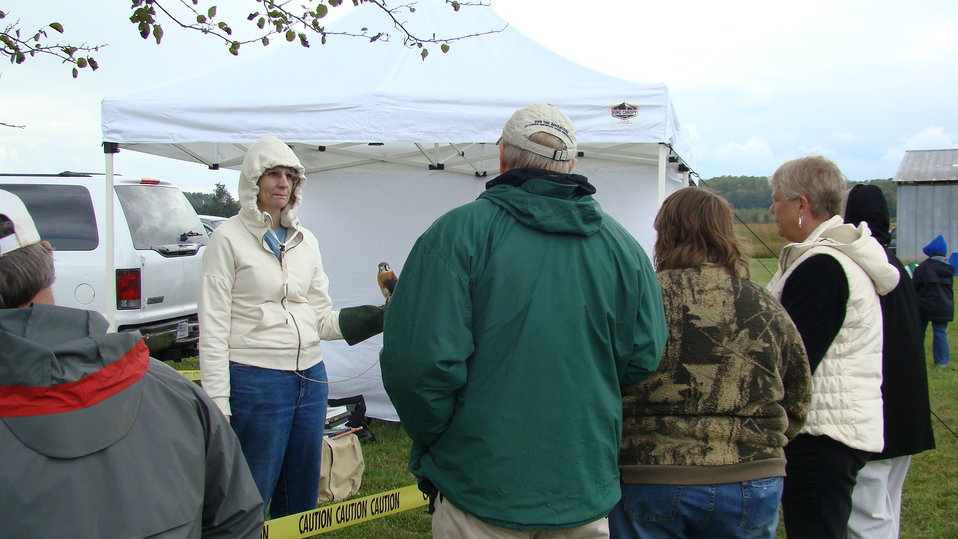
Rappahannock River Valley NWR 15th Anniversary

'Go Wild!' attendees check out live raptors at a display by The Raptor Conservancy.